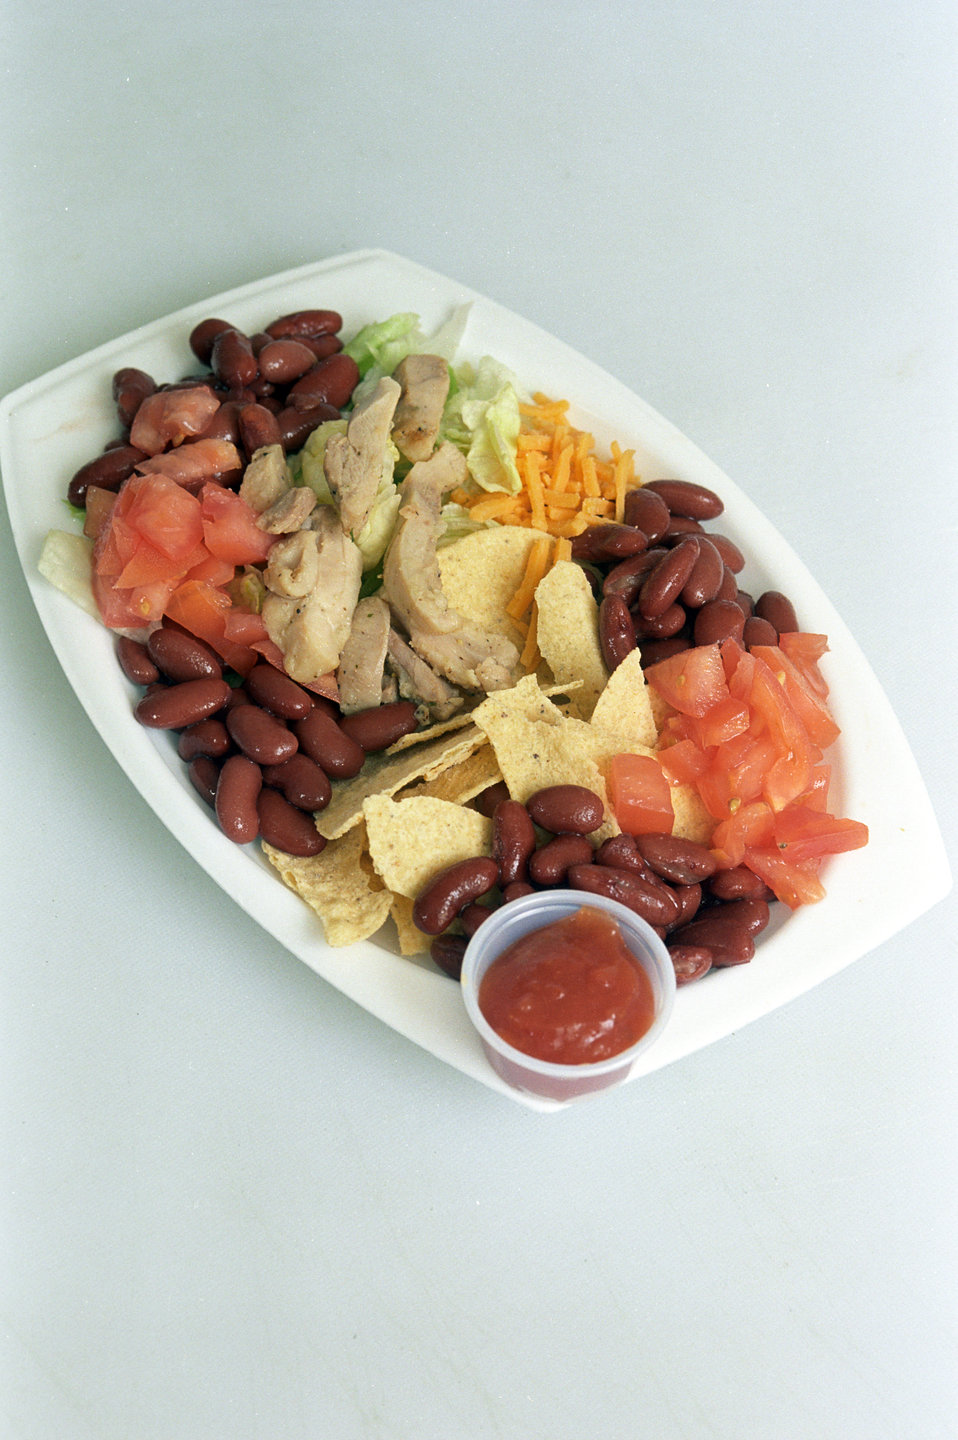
A nutritious and flavorful lunch is prepared at a school in St. Petersburg, FL on January 15, 2003. The U.S. Department of Agriculture's (USDA) Food and Nutrition Service (FNS) Fresh Fruit and Vegetable Program (FFVP) was introduced to schools in 2003. The FFVP provides all children in participating schools with a variety of free fresh fruits and vegetables throughout the school day. It is an effective and creative way of introducing fresh fruits and vegetables as healthy snack options. The FFVP also encourages schools to develop partnerships at the State and local level for support in implementing and operating the program. The Goal of the FFVP is to create healthier school environments by providing healthier food choices, expand the variety of fruits and vegetables children experience, increase children’s fruit and vegetable consumption, and make a difference in children’s diets to impact their present and future health.